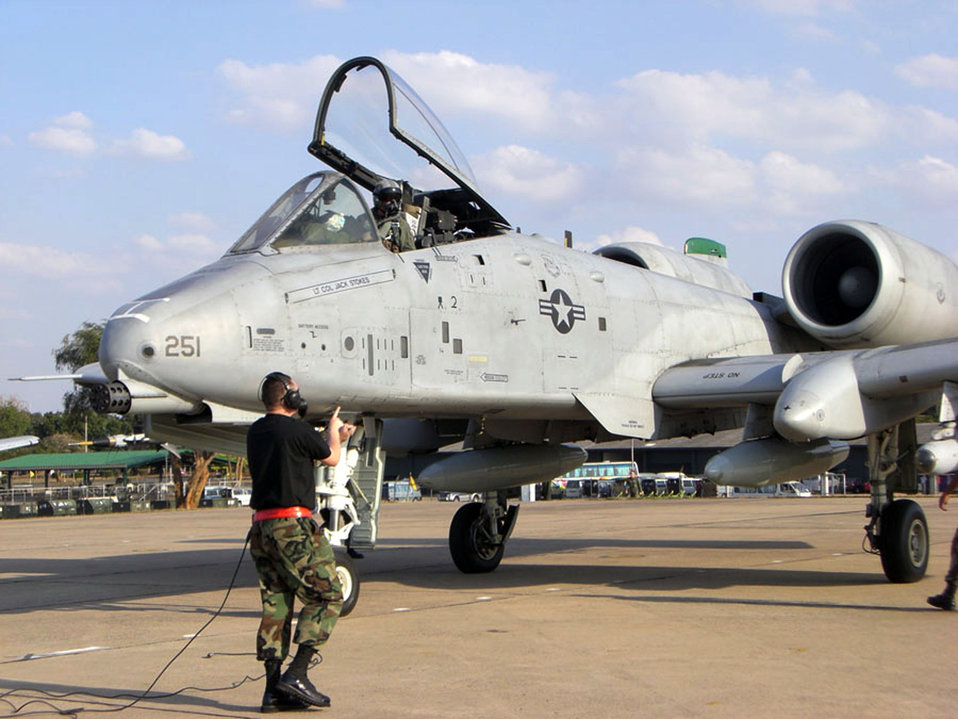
PACAF Airmen combat-train with Thailand, Singapore

A maintainer marshalls an A-10 Thunderbolt II after landing at the Korat Royal Thai Air Base, Thailand, from Osan Air Base, South Korea. Six A-10s from the 25th Fighter Squadron at Osan AB are in Thailand to participate in Exercise Cope Tiger 2008, a multilateral joint and combined field training and humanitarian and civic assistance exercise involving Thailand, Singapore and the United States.